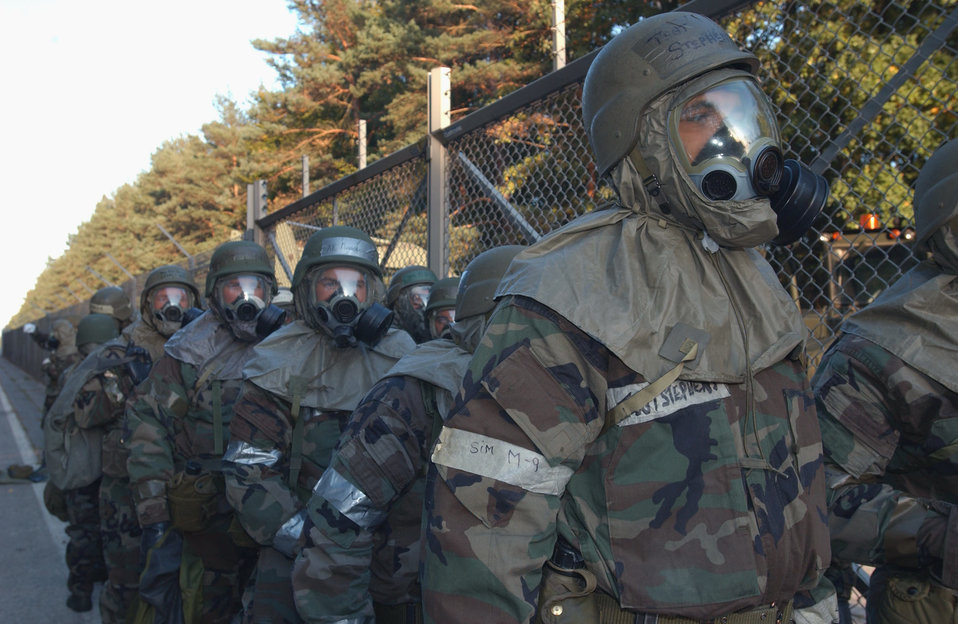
Silver Flag

RAMSTEIN AIR BASE, Germany -- Silver Flag exercise participants here process through a contamination-control area after a simulated chemical attack during a portion of the exercise. The exercise, which ended Oct. 19, provided more than 250 U.S. Air Forces in Europe airmen from several specialties with realistic contingency-operations training. Previous exercises included only civil engineer and services airmen. The control area is used to decontaminate people who have been in the area of a chemical attack.